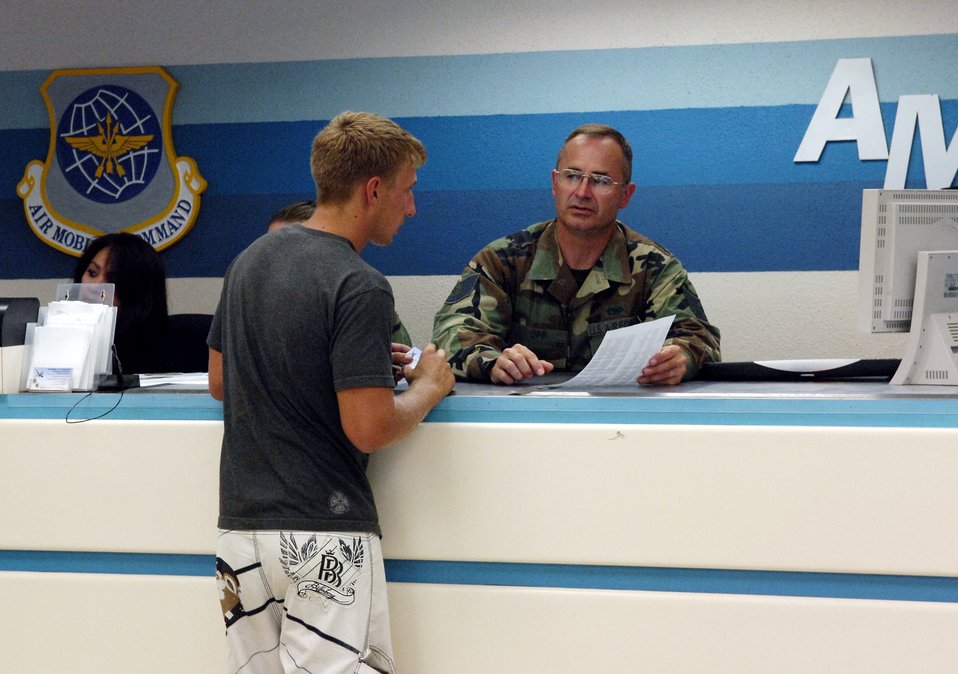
Wright-Patterson Airmen take over Hickam air operations

Tech. Sgt. Timothy Opp helps a passenger in the passenger terminal center July 2 at Hickam Air Force Base, Hawaii. Reservists from the 87th Aerial Port Squadron from Wright-Patterson AFB, Ohio, are conducting their two-week duty with the 735th Air Mobility Squadron.